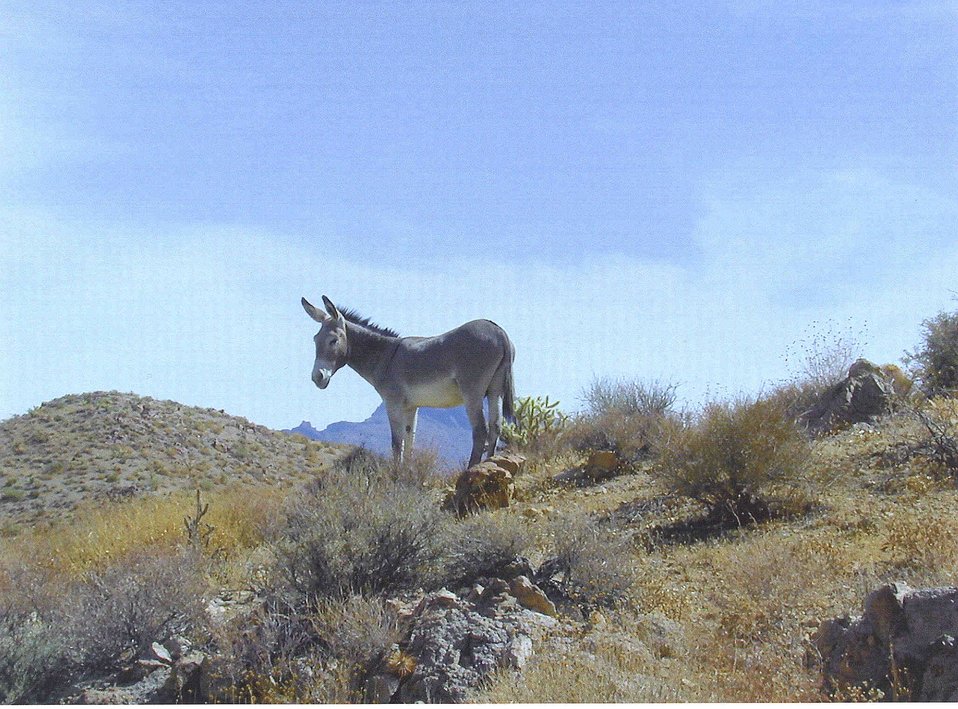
Wild Burro north of Artillery Peak in Alamo Herd Management Area